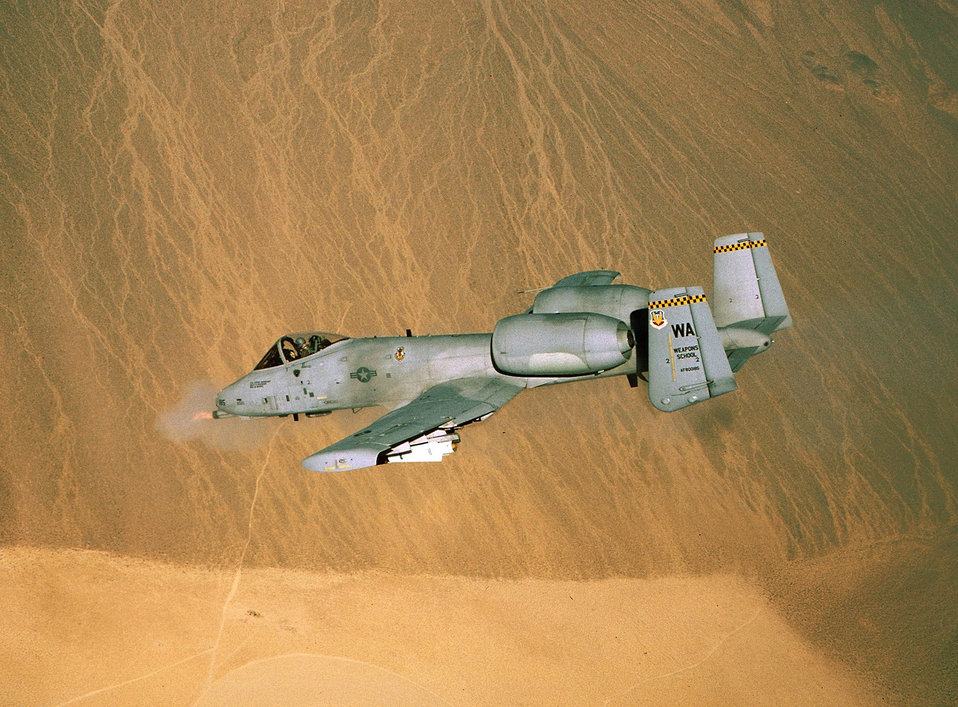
A-10 Thunderbolt II

1990's -- The A-10 Thunderbolt II is the first Air Force aircraft specially designed for close air support of ground forces. They are simple, effective and survivable twin-engine jet aircraft that can be used against all ground targets, including tanks and other armored vehicles.